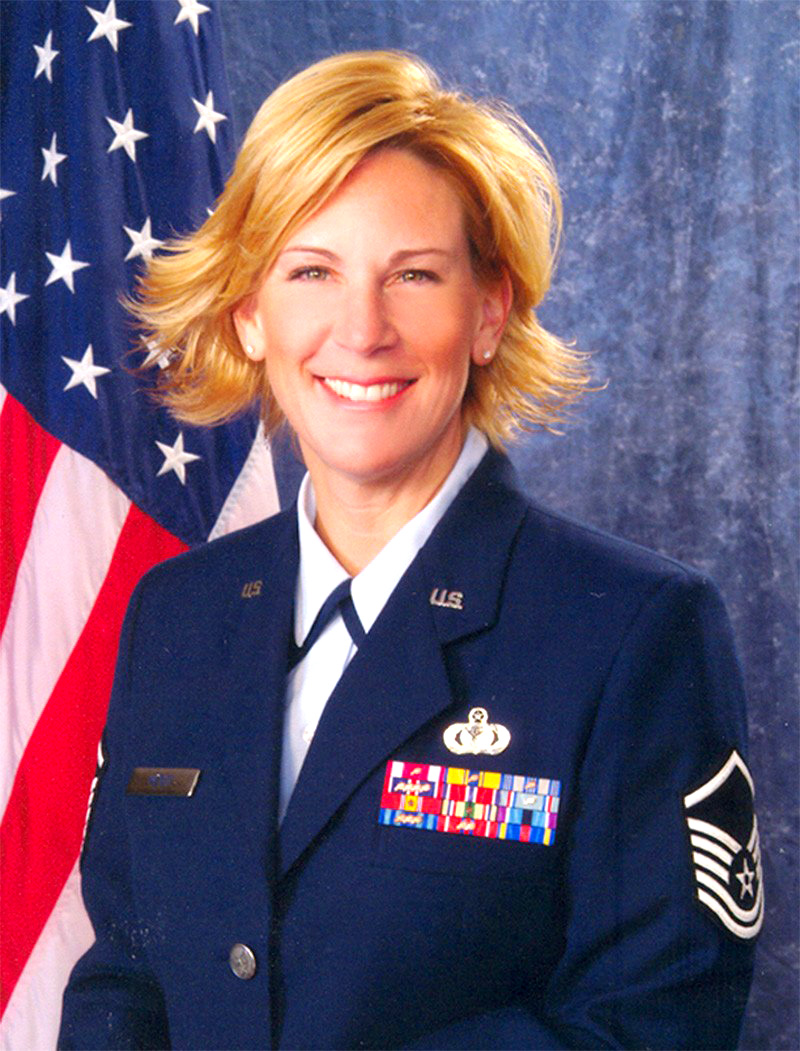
Airman named one of 10 Outstanding Young Americans

SCOTT AIR FORCE BASE, Ill. -- Master Sgt. Karen Petitt was named by the U.S. Junior Chamber of Commerce as one of its 2005 10 Outstanding Young Americans. She is a public affairs specialist with the Air Force Communications Agency here.